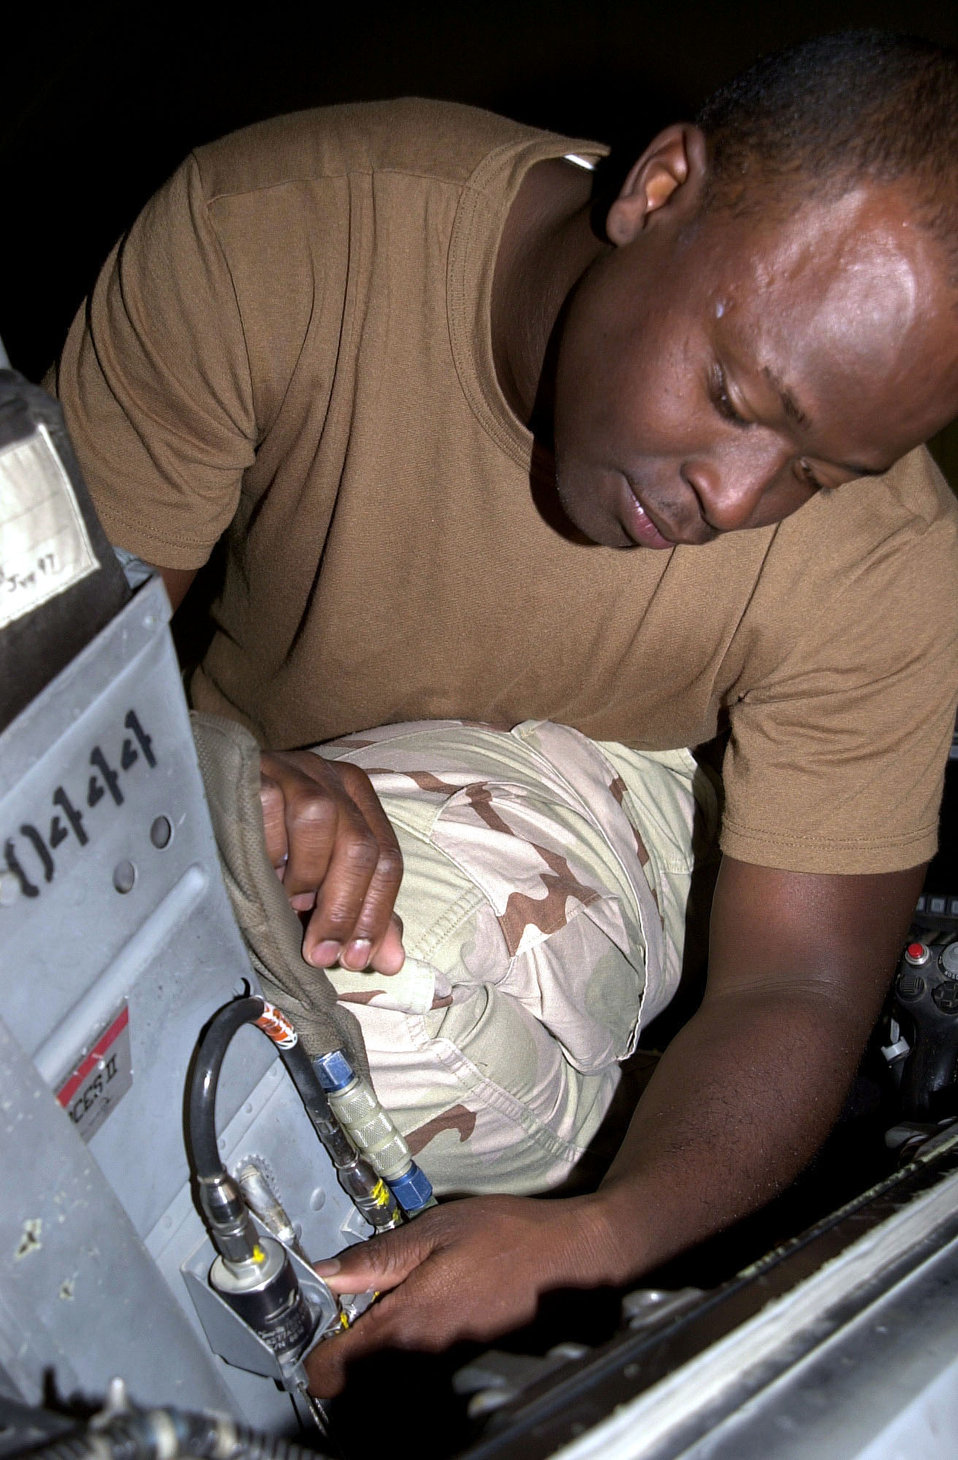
When all else fails, egress prevails

SOUTHWEST ASIA -- Airman 1st Class Anthony Allen inspects the ballistic hose on the ejection seat of an F-16 Fighting Falcon here. The ballistic hose lines transfer explosive gas that detonates other components that help the seat eject. Airman Allen is an egress systems apprentice assigned to the 379th Expeditionary Maintenance Squadron.